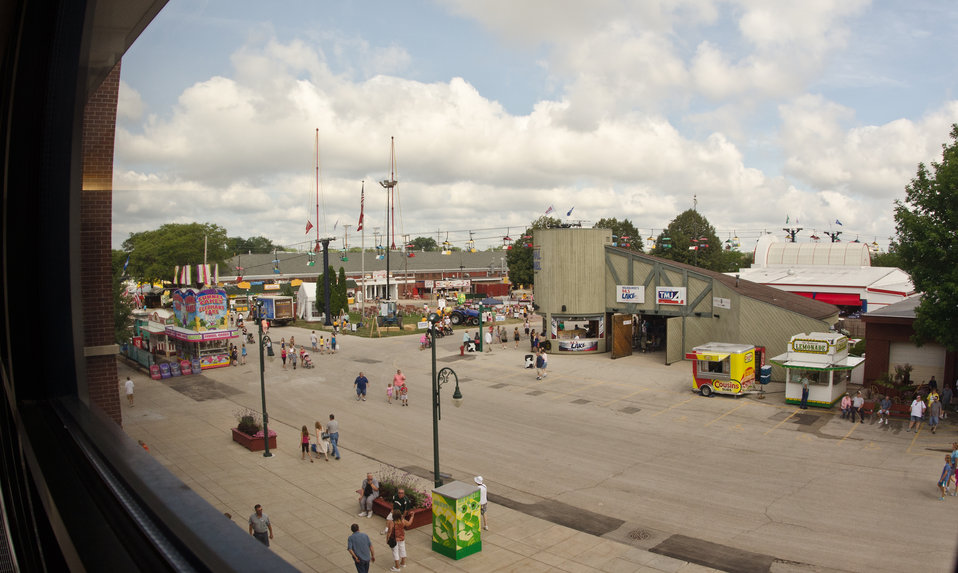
Wisconsin State Fair Grounds in west Allis, WI, on Thursday, Aug. 4, 2011.